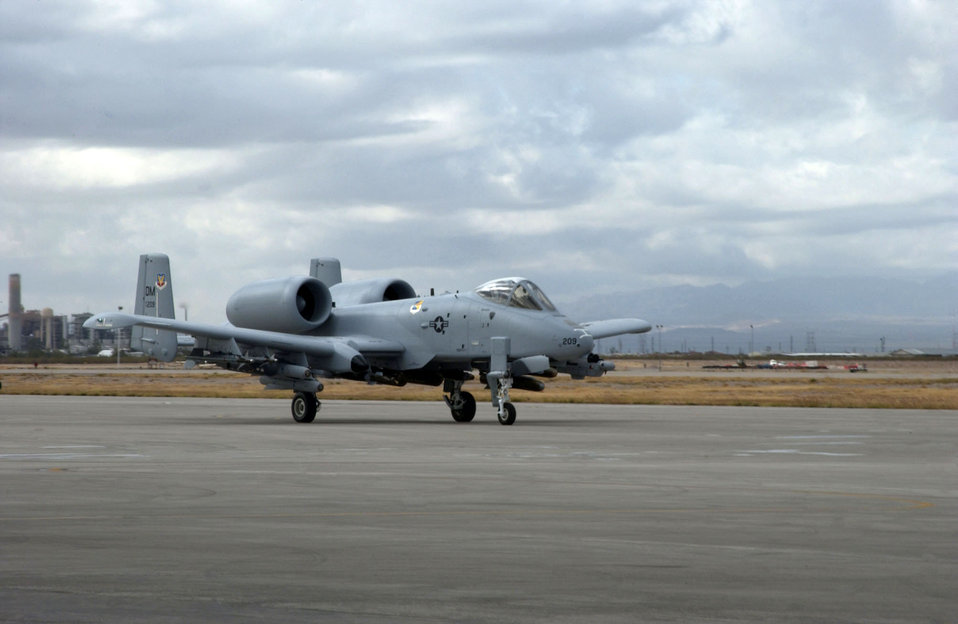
Enhanced A-10 arrives at Davis-Monthan

A newly modified A-10C Thunderbolt II taxis in during the roll-out ceremony Nov. 29 at Davis-Monthan Air Force Base, Ariz. The A-10 has been modified with precision engagement technology to create the new and improved A-10C. The enhancements include full integration of sensors, multi-functional color displays and a new hands-on-throttle-and-stick interface.